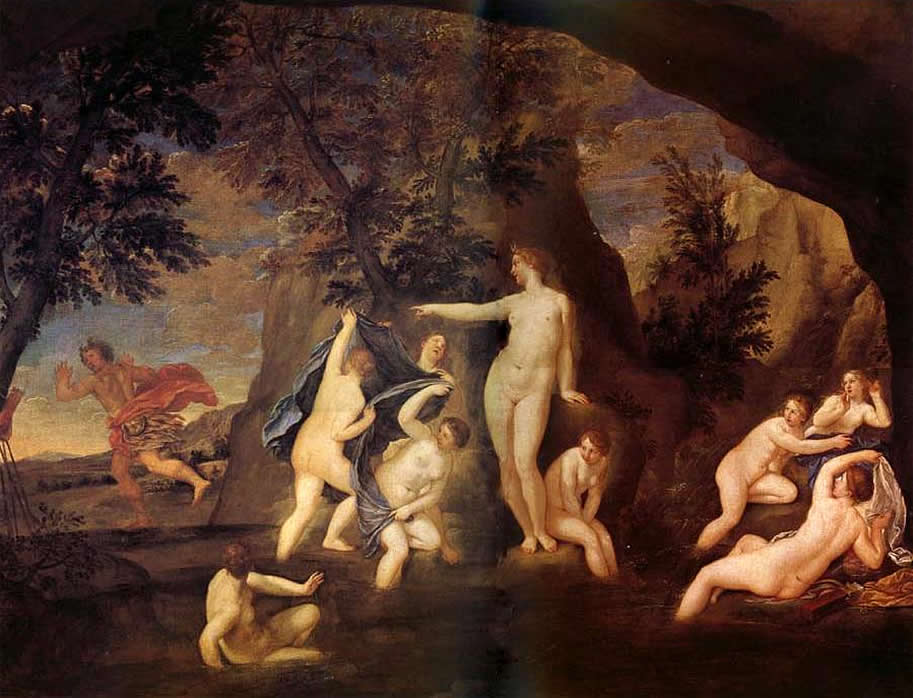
Actéon métamorphosé en cerf by Francesco Albani